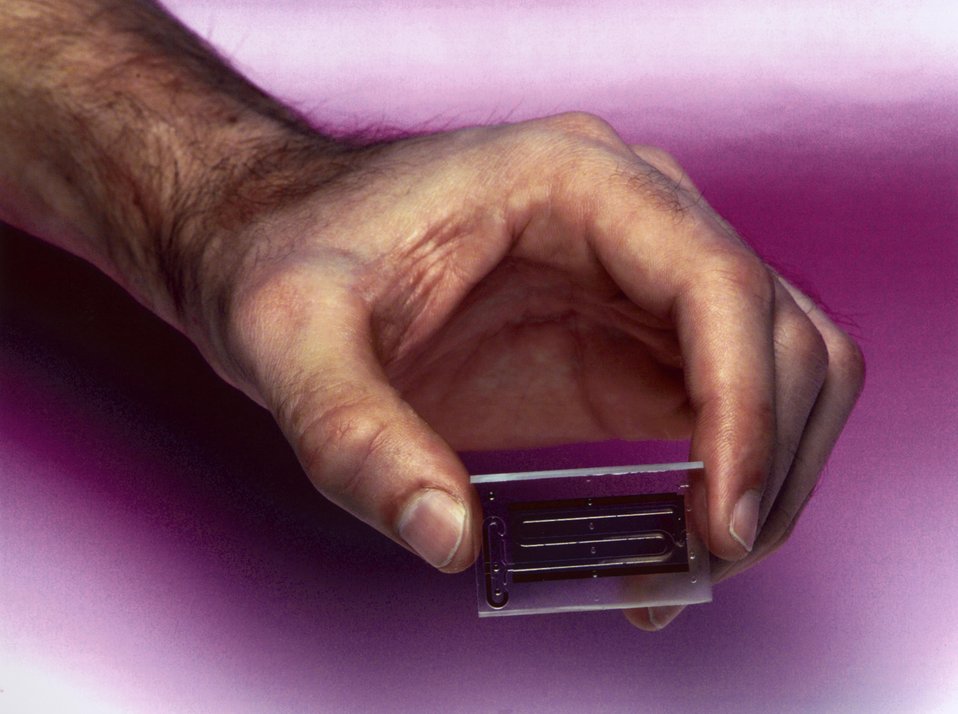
AN INTEGRATED INJECTION-SEPARATION-DETECTION SYSTEM ON A 2.5 BY 4-CENTIMETER SUBSTRATE.
LLNL ENGINEERS ARE WORKING AT THE UNIVERSITY OF TEXAS M.D. ANDERSON CANCER CENTER, SPONSORED BY THE DEFENSE ADVANCED RESEARCH PROJECTS AGENCY, TO DEVELOP AN INSTRUMENT THAT INCORPORATES NEW TECHNOLOGIES FOR SEPARATING PARTICLES, (KNOWN AS FRACTIONATION) SENSING THEM AND IDENTIFYING THEM BASED ON THEIR DIELECTRIC PROPERTIES. ITS FIRST USE WILL BE TO PERFORM DIFFERENTIAL CELL ANALYSIS ON BLOOD SAMPLES.